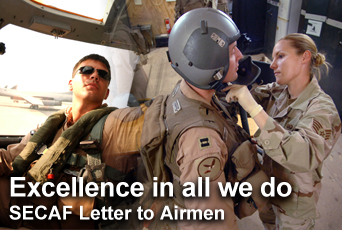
Letter to Airmen

In the latest Letter to Airmen, Secretary of the Air Force Michael W. Wynne discusses the core value of